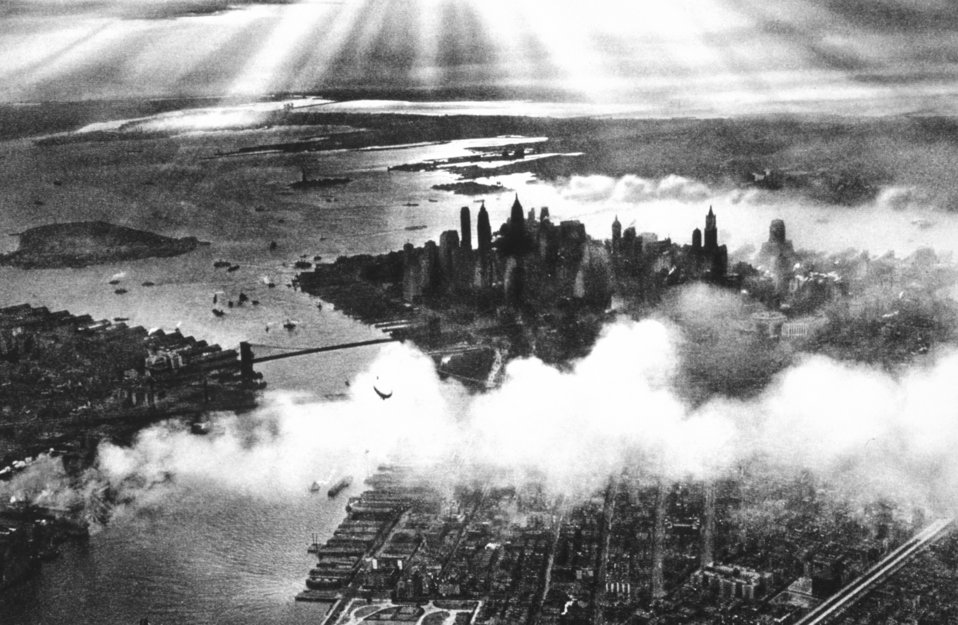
Sunset over New York City. In: 'Flug Und Wolken', Manfred Curry, Verlag F. Bruckmann, Munchen, 1932.